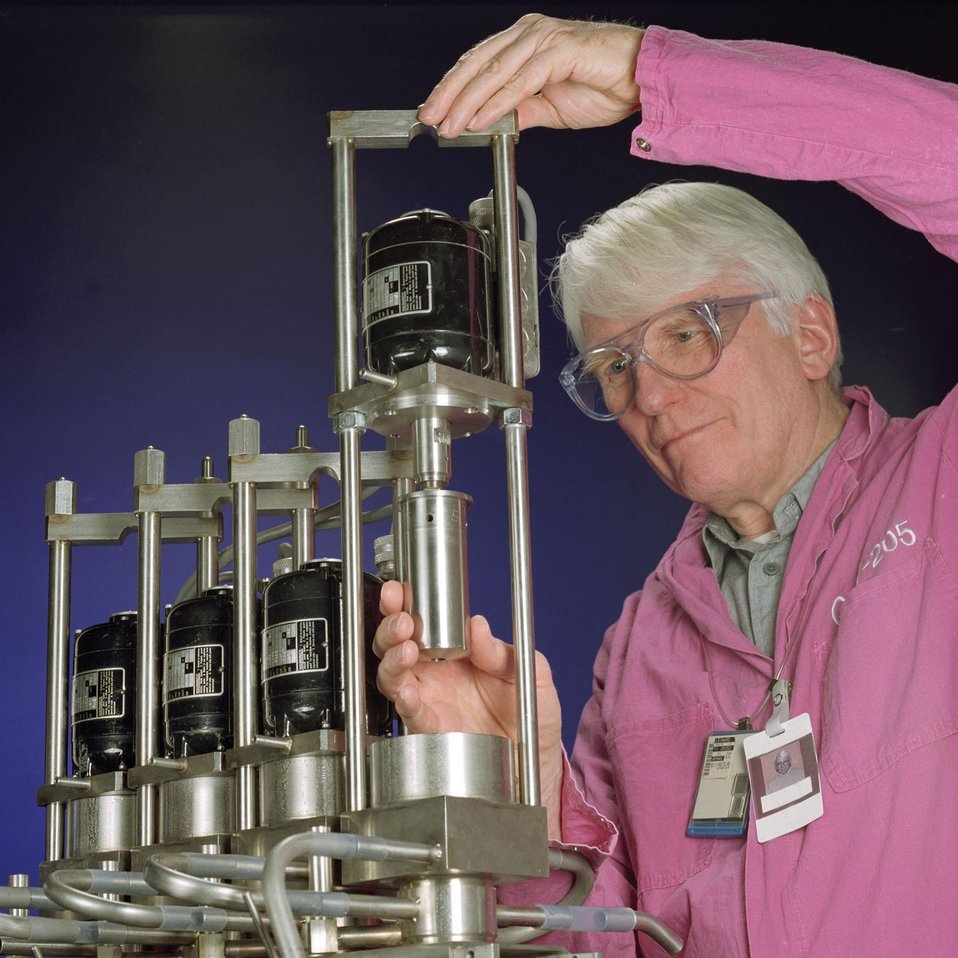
ANL SCIENTIST EXAMINES THE CENTRIFUGAL CONTRACTOR WHICH IS CRITICAL TO THE SOLVENT EXTRACTION PROCESS.

A SOLVENT EXTRACTION PROCESS DEVELOPED AT ARGONNE AND OAK RIDGE NATIONAL LABORATORY MAY REDUCE BY 15-FOLD THE VOLUME OF HIGH LEVEL, LIQUID WASTE CREATED AS A BY-PRODUCT OF PLUTONIUM FROM NUCLEAR WEAPONS PRODUCTION, NOW STORED AT DOE'S SAVANNAH RIVER SITE. THE PROCESS, CSSX 'CAUSTIC-SIDE SOLVENT EXTRACTION' COMBINES A HIGHLY SELECTIVE SOLVENT DEVELOPED AT ORNL AND A SOLVENT EXTRACTION DEVICE, CALLED A 'CENTRIFUGAL CONTRACTOR' DEVELOPED AT ANL. THE PROCESS WILL EXTRACT THE RADIOACTIVE CESIUM-137 FROM HIGH LEVEL LIQUID WASTE, TO BE INCORPORATED INTO A GLASS WASTE FORM FOR DISPOSAL IN A REPOSITORY. THE REMAINING WASTE CAN BE DISPOSED AS LOW LEVEL RADIOACTIVE WASTE.